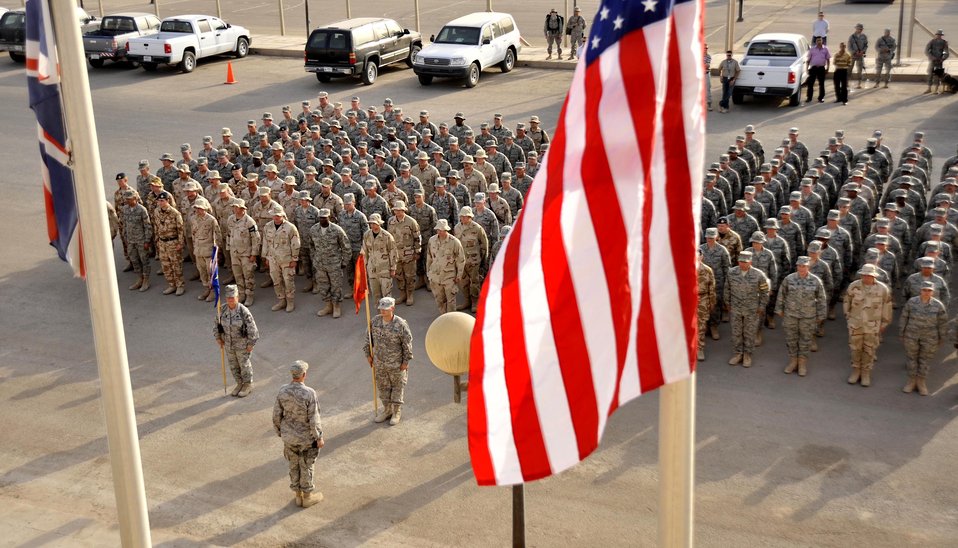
One moment in time changes the course of history

Soldiers, Airmen and Royal Air Force members stand in a joint formation for a ceremony on the seven-year anniversary of the terrorist attacks of Sept. 11, 2001, Sept. 11 at Sather Air Base, Iraq.